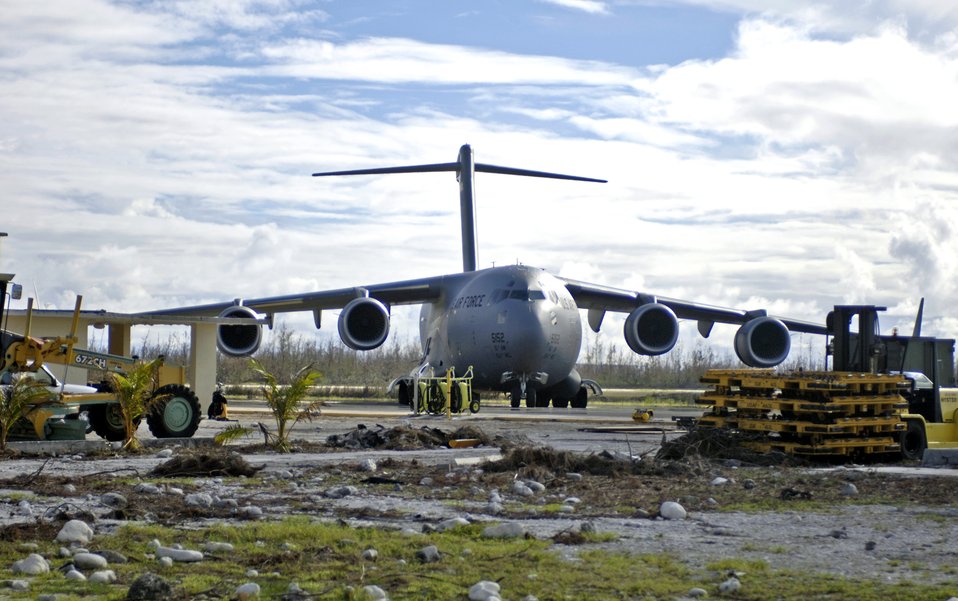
Teams fly to Wake Island to assess damage

A C-17 Globemaster III sits on the flightline at Wake Island Sept. 12. Debris and coral are signs of the destruction left by Super Typhoon Ioke after it hit the island Aug. 31. The C-17 Globemaster III is from Hickam Air Force Base, Hawaii, and brought a 53-person team to the island to assess damage left by the typhoon.